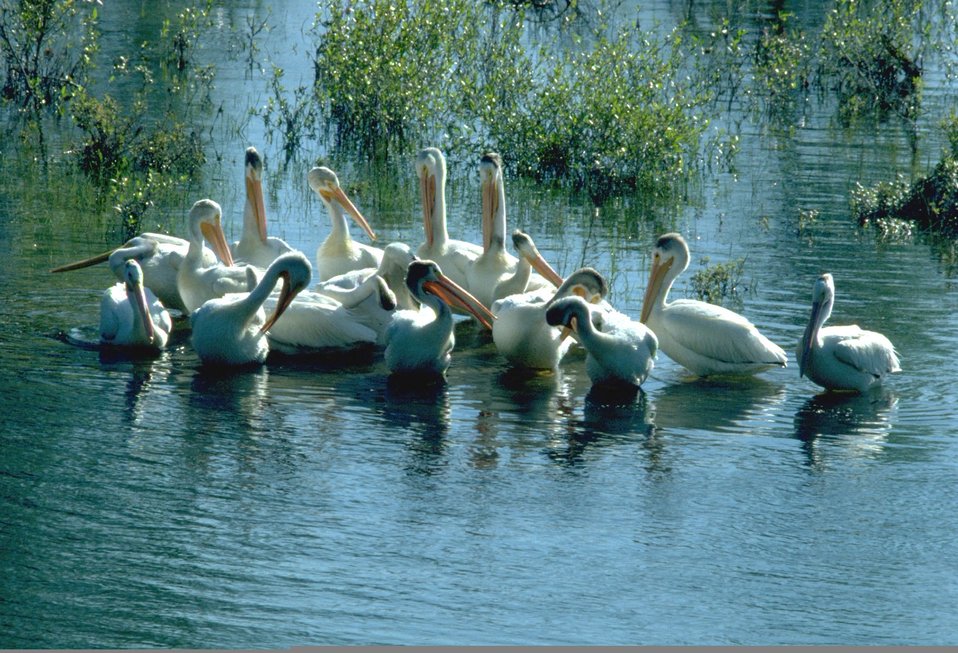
Pelicans on Holter Lake